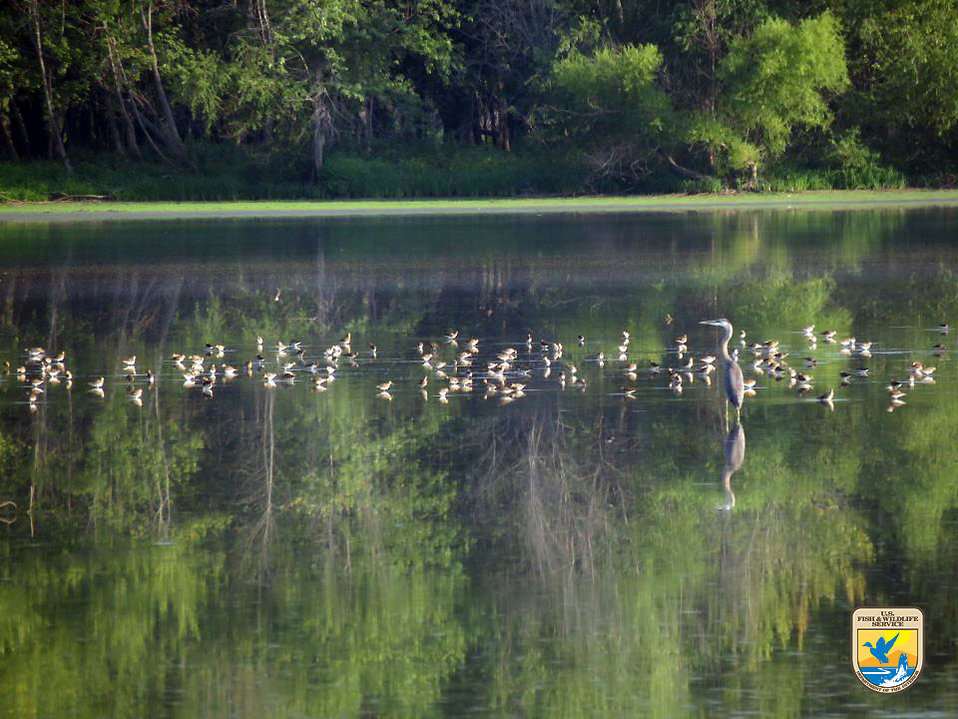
Shore Birds - Midwest Region

Mixed shorebirds on the Louisa Division at Port Louisa National Wildlife Refuge.